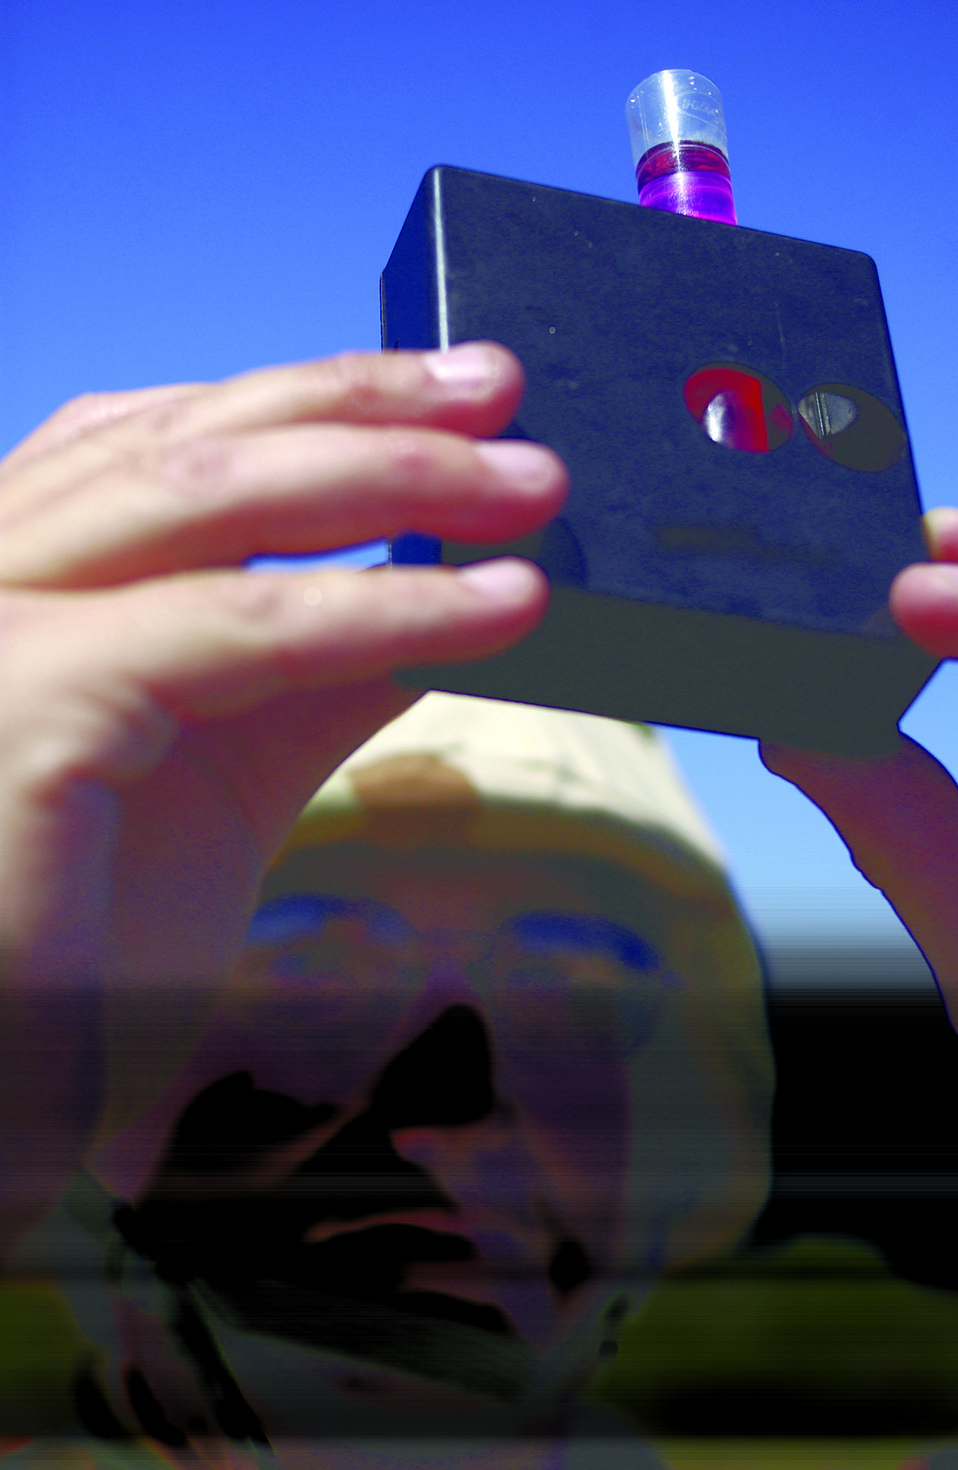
Ready for anything

VANDENBERG AIR FORCE BASE, Calif. -- Senior Airman Clifford Cochrany tests the chlorine levels of the potable water supply during an exercise here. Exercises are periodically conducted to train and prepare Airmen for deployments. Airman Cochrany is assigned to the 30th Civil Engineer Squadron.